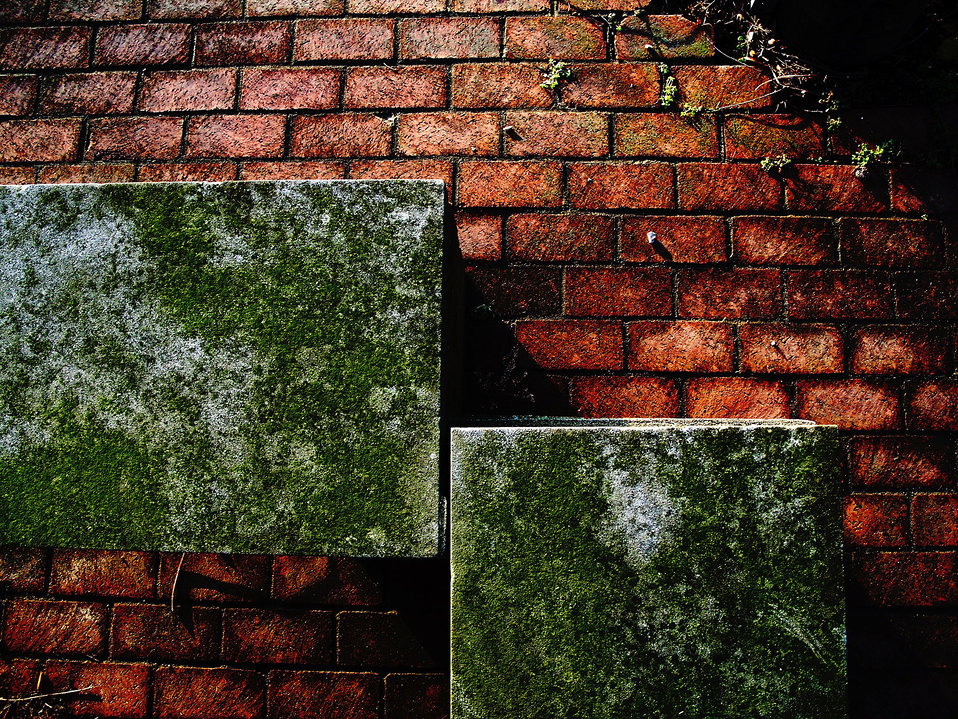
Bricks and cement.